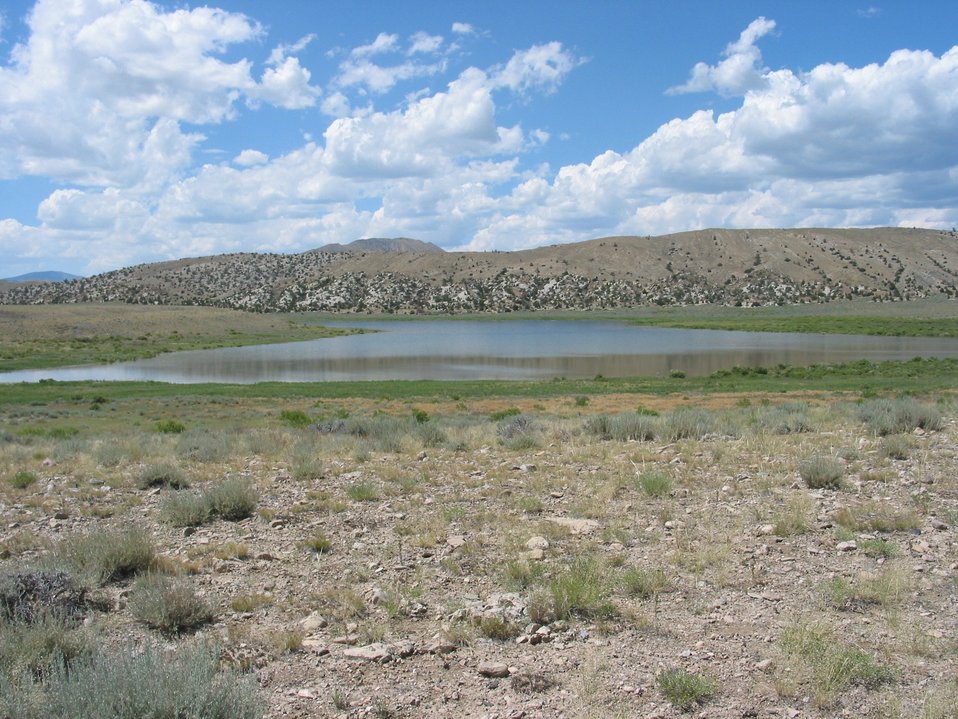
Wind River Reservation

The Region 6 Partners for Fish and Wildlife program worked voluntarily with the Shoshone and Arapaho Tribes to complete a wetland restoration project funded through the American Recovery and Reinvestment Act. The site is located on the Wind River Reservation in Wyoming.